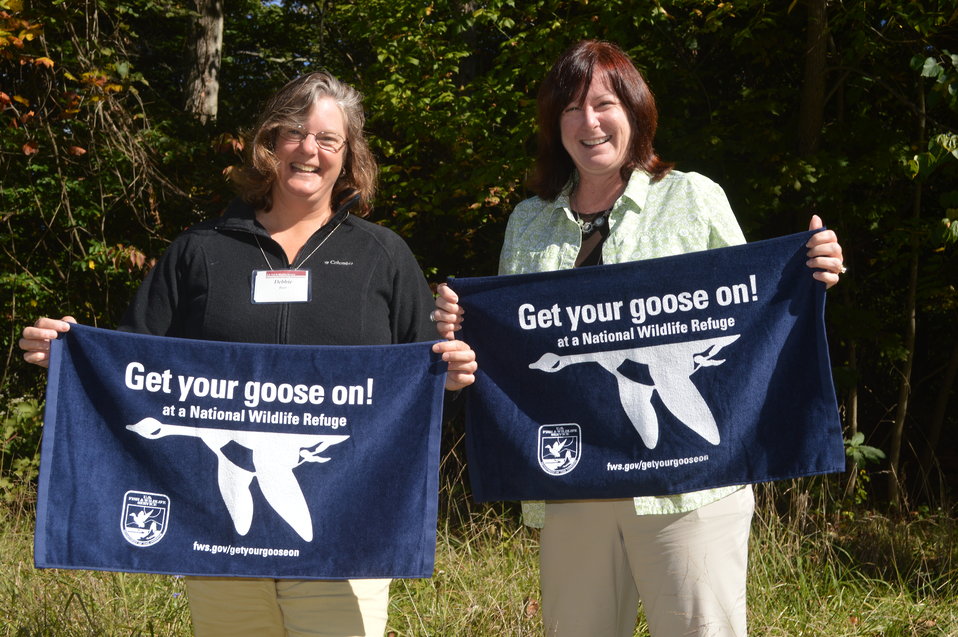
Get Your Goose On!

Photo taken at the National Conservation Training Center in Shepherdstown, WV.

Credit: Ryan Moehring / USFWS

#GetYourGooseOn